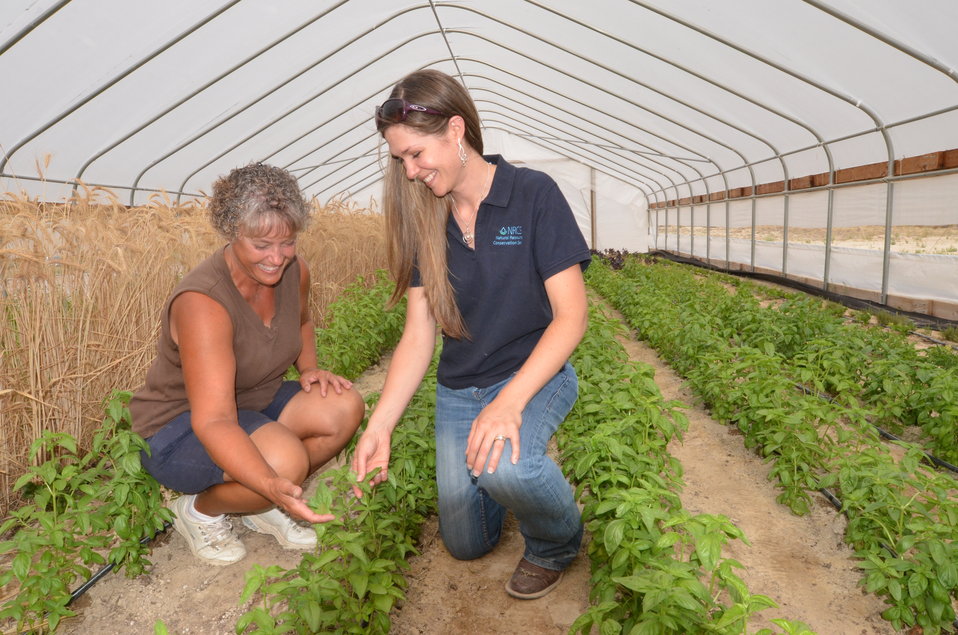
Farmer Carol Huether has worked closely with U.S. Department of Agriculture (USDA) Natural Resources Conservation Service (NRCS) District Conservationist Jaime Jasmine by providing hands on assistance in Elko, NV..